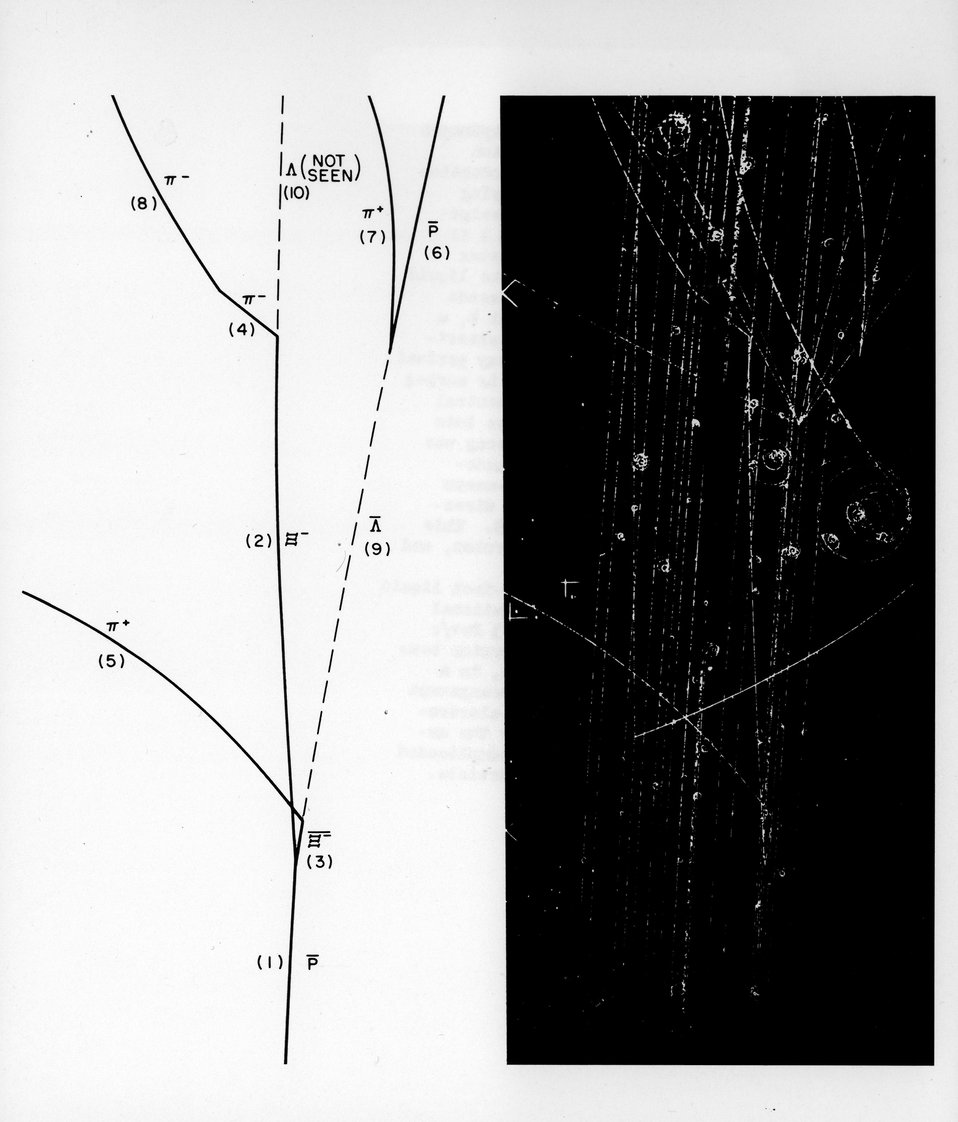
Liquid hydrogen bubble chamber photograph of an anti-proton
colliding with a proton, resulting in production of a cascade Hyperion pair.